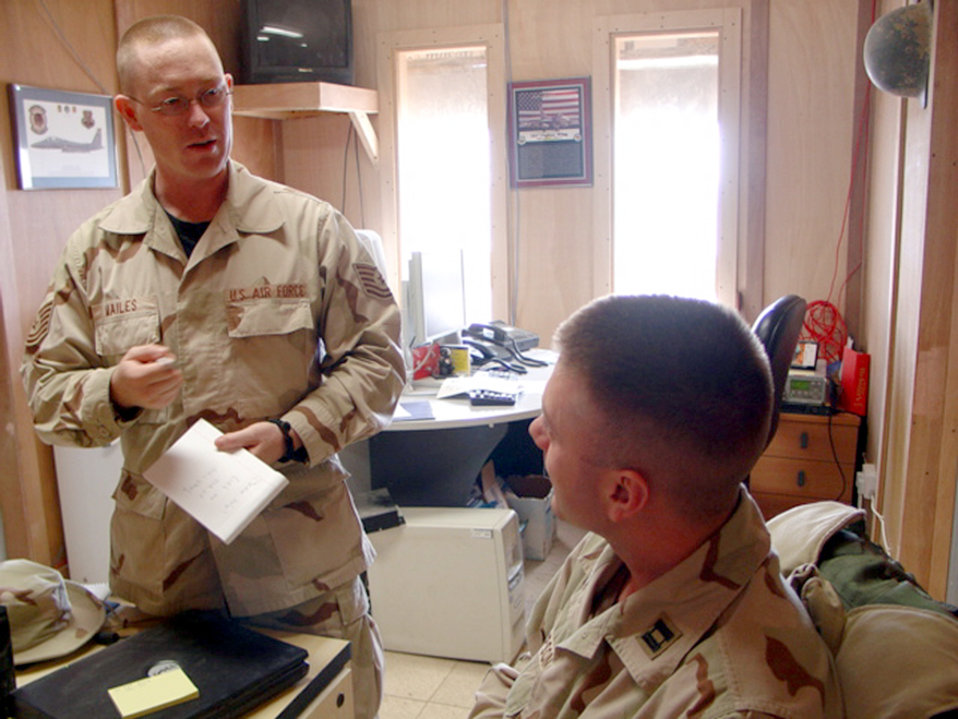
Making history

TALLIL AIR BASE, Iraq -- Tech. Sgt. Yancy Mailes (left) interviews Capt. Gary Thompson while compiling a history about the wing's role during Operation Iraqi Freedom. Sergeant Mailes is the 332nd Air Expeditionary Wing historian and is deployed from Mountain Home Air Force Base, Idaho. Captain Thompson is the 332nd AEW executive officer and is deployed from Wright Patterson AFB, Ohio.